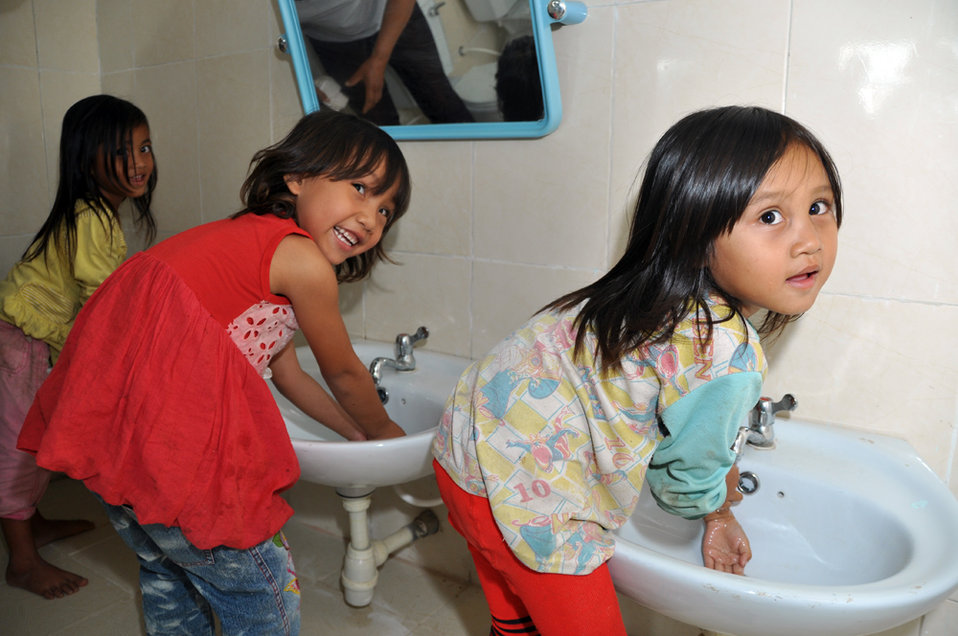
USAID contributes to refurbished pre-schools and teacher training in Vietnam